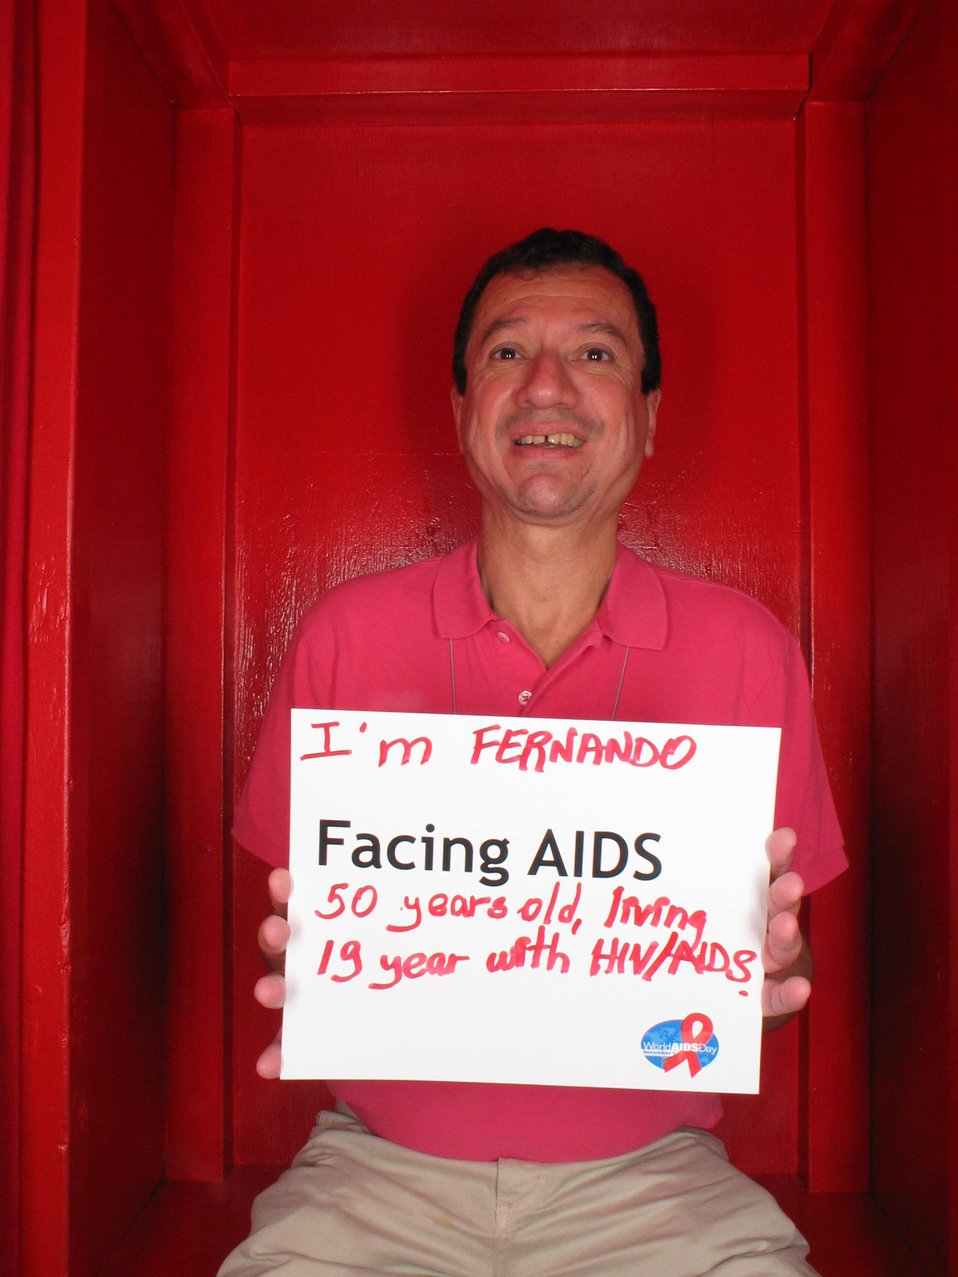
Facing AIDS 50 years old, living 13 years with HIV/AIDS.